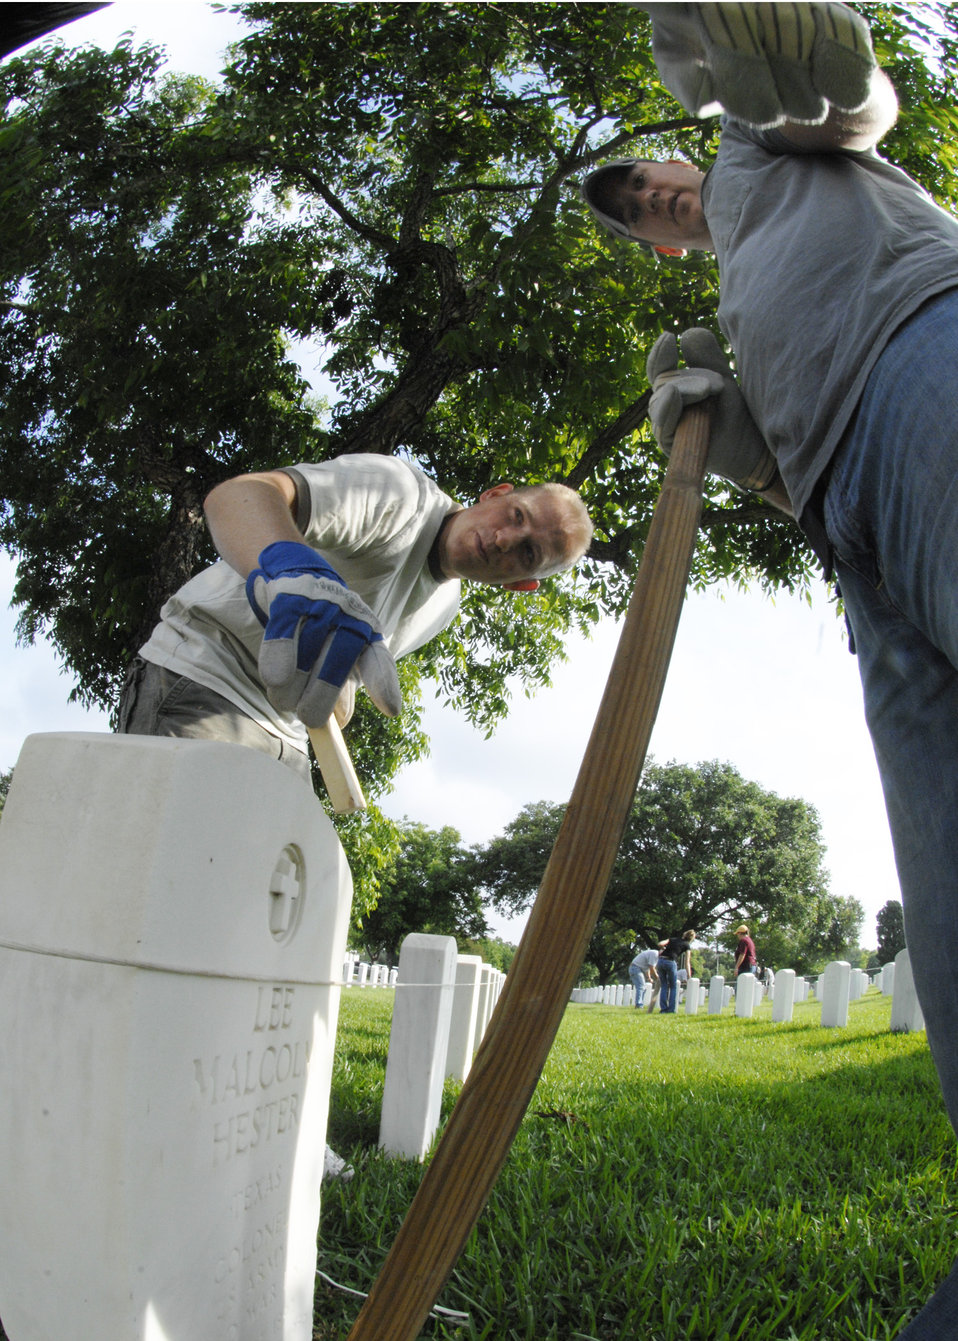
Serving those who served

Staff Sergeants Mattew Bates (left) and Harry Kibbe straighten headstones May 15 at the Fort Sam Houston National Cemetery in San Antonio. This process aligns and straightens all the headstones and prepares the cemetery for funerals and the upcoming Memorial Day weekend. Airmen assigned to the Air Force News Agency in San Antonio spent the day adjusting the headstones.